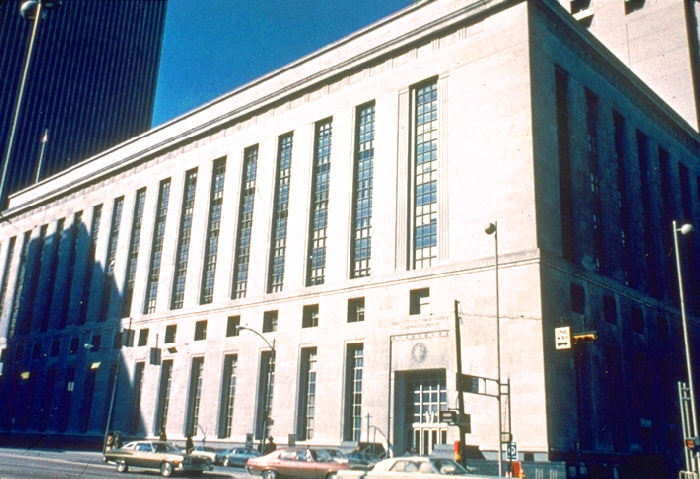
This is the National Institute for Occupational Safety and Health (NIOSH) old post office building, located in Cincinnati, Ohio.